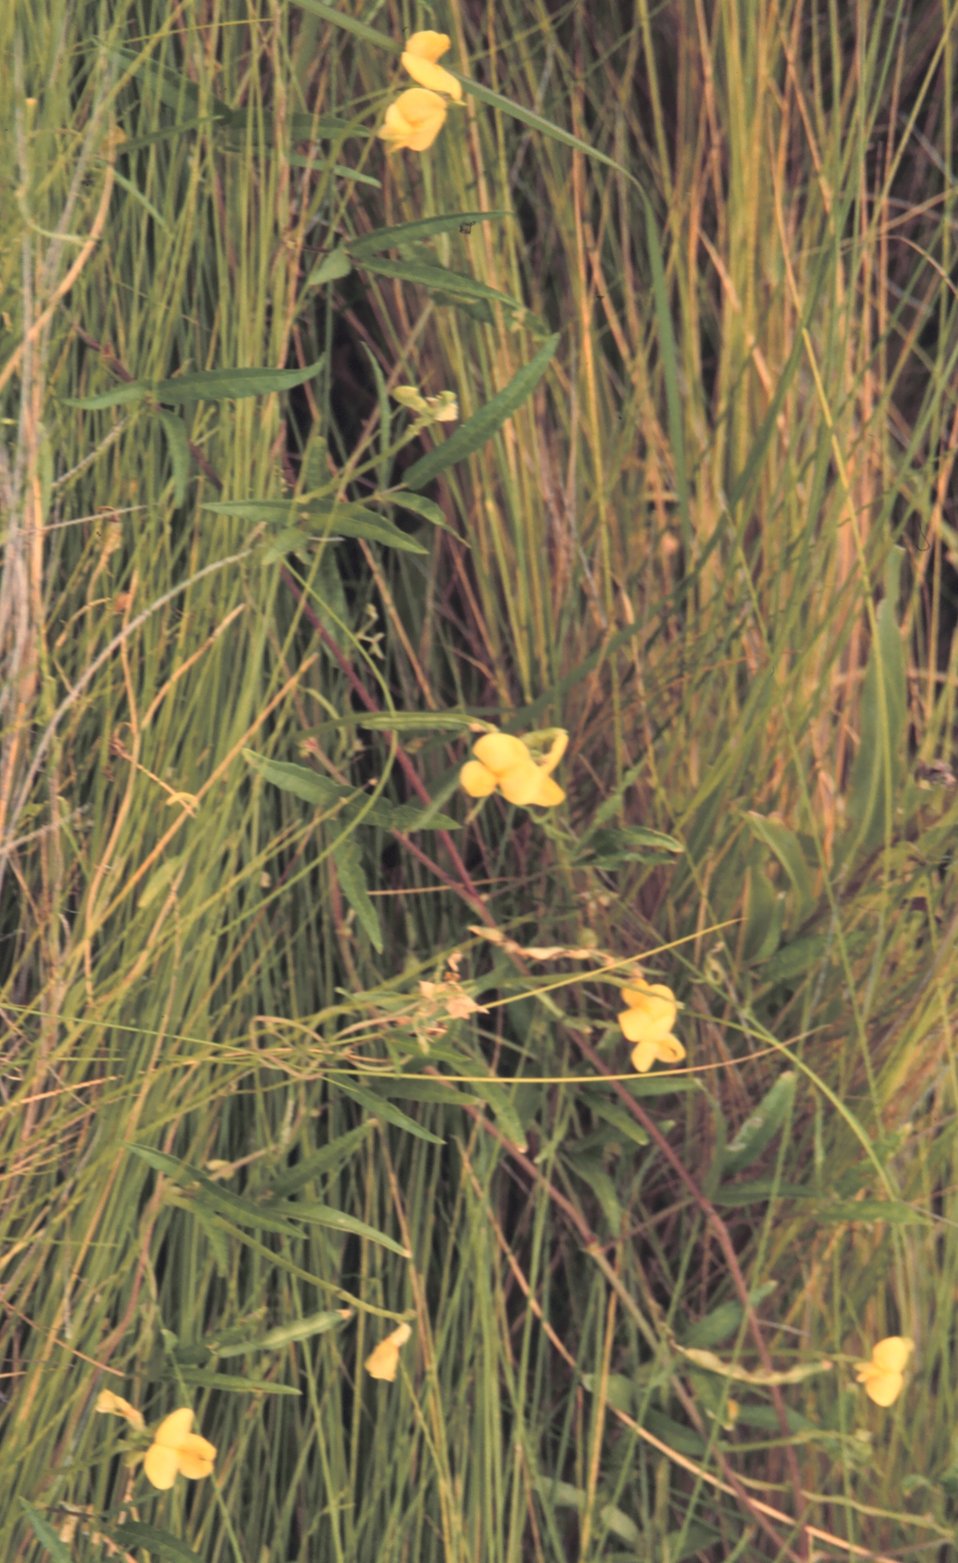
Deer pea is a common marsh plant that plays an important role in nitrogen cycling.